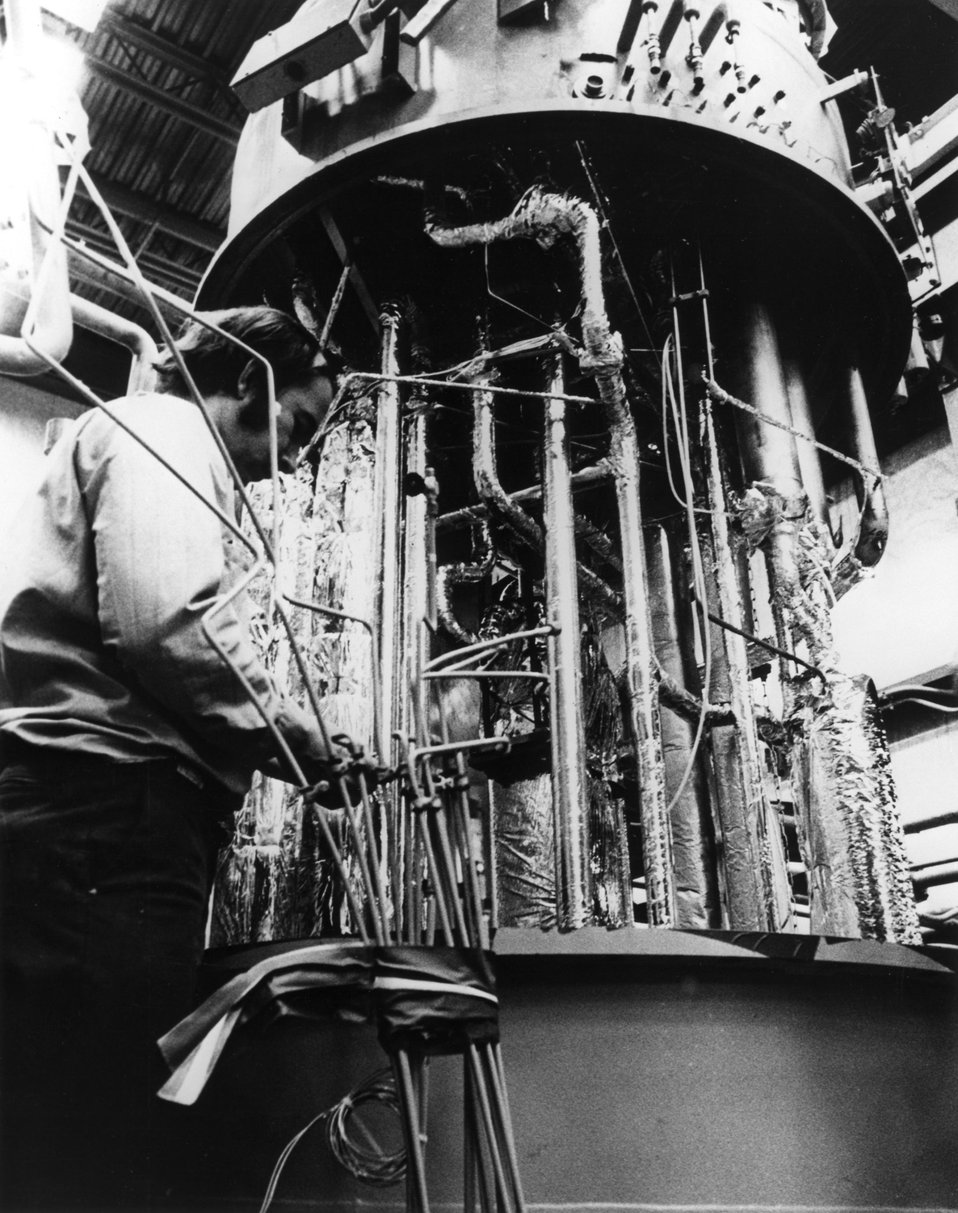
Completing installation of the cryogenic equipment for the 15-Ft. Bubble Chamber. c. 1974